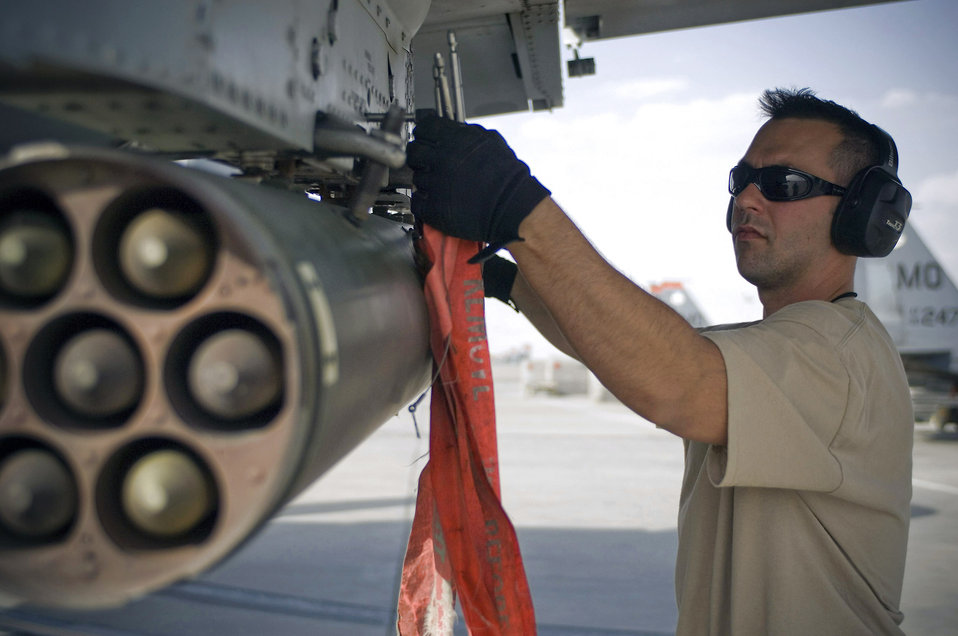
The final step to

A crew chief with the 455th Expeditionary Aircraft Maintenance Squadron removes the safety pins on an A-10 Thunderbolt II Sept. 12 before a close air support mission at Bagram Airfield, Afghanistan.